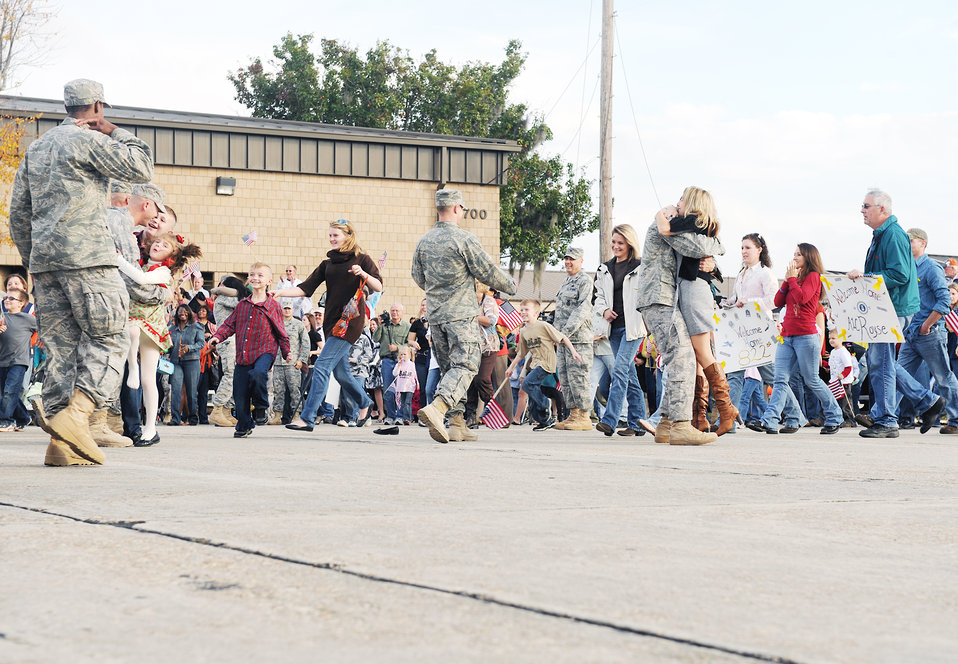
Moody Airmen return home

Families and friends run to greet Airmen returning from a deployment Dec. 8, 2009, at Moody Air Force Base, Ga. The 822nd Security Forces Squadron Airmen were deployed to Camp Bucca, Iraq, and during the deployment, the squadron performed joint expeditionary taskings and performed outside-the-wire security operations and convoy escort.